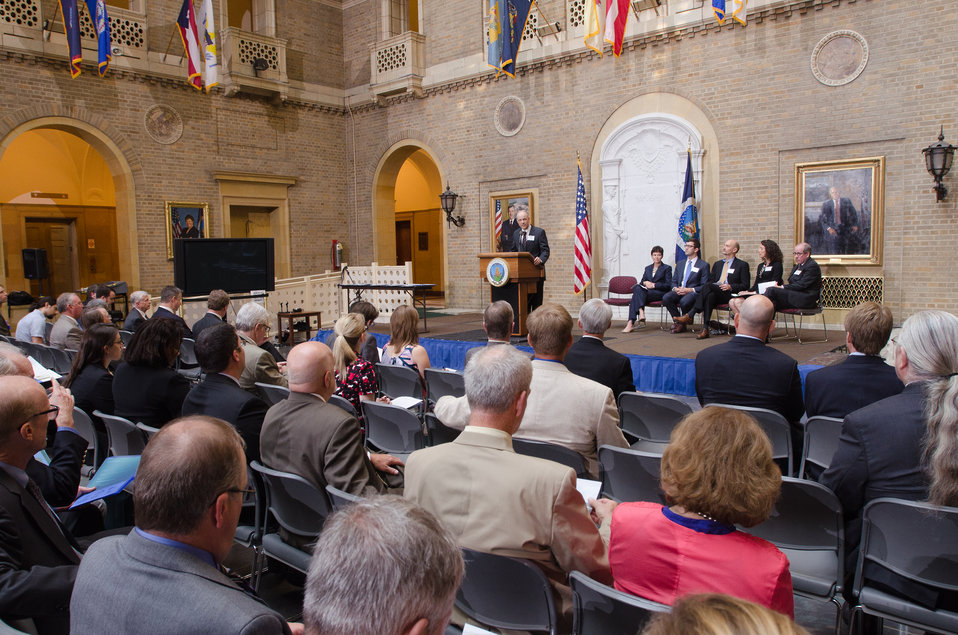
U.S. Department of Agriculture (USDA) Rural Development (RD) Under Secretary Doug O’Brien moderates the USDA Wood Energy Memorandum of Understanding, and awarded wood energy grants announcements event, at the USDA Headquarters, in Washington, D.C., on Wednesday, September 11, 2013. Signing the MOU are partnership leaders Biomass Thermal Energy Council, Executive Director Joseph Seymour; Alliance for Green Heat, President John Ackerly, USDA Deputy Secretary Krysta Harden; Pellet Fuels Institute Executive, Director Jennifer Hedrick; Biomass Power Association, President and CEO Bob Cleaves, and Secretary Thomas Vilsack who signed it earlier.
The partnership agreement focuses on promoting wood energy nationwide as a means to address fire risks, bolster rural economic development, improve air quality, and help meet the Obama Administration’s renewable energy and energy efficiency goals. These organizations support the use of wood energy across the scale of users – from residential users, to commercial and intuitional facilities, to industrial production of heat and or electricity to drive businesses and feed the electrical grid.
Under the terms of the five grants announced by Deputy Secretary Harden, private, state and federal organizations will work together to stimulate the development of additional wood energy projects in their states. Collectively, $2.9 million will be spent o this effort -- $1.1 million on federal funds and $1.8 million in non federal funds. For more information o0n the cooperative agreement program, visit na.fs.fed.us.werc/wood-energy/ USDA Photo by Lance Cheung.